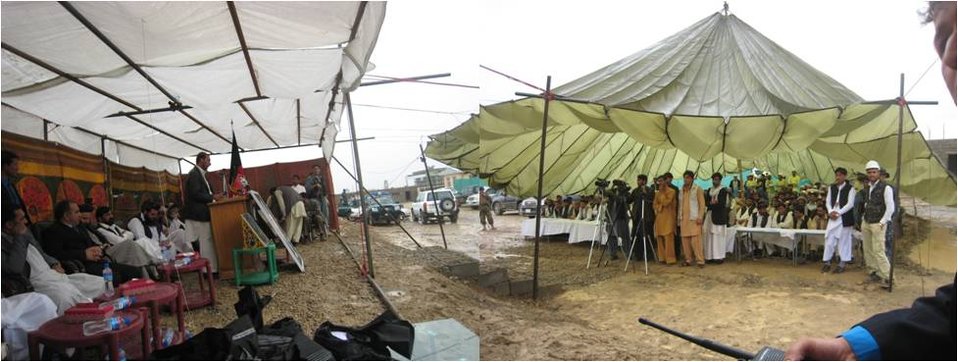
Rain or Shine: A New Regional Hospital Is on Its Way!